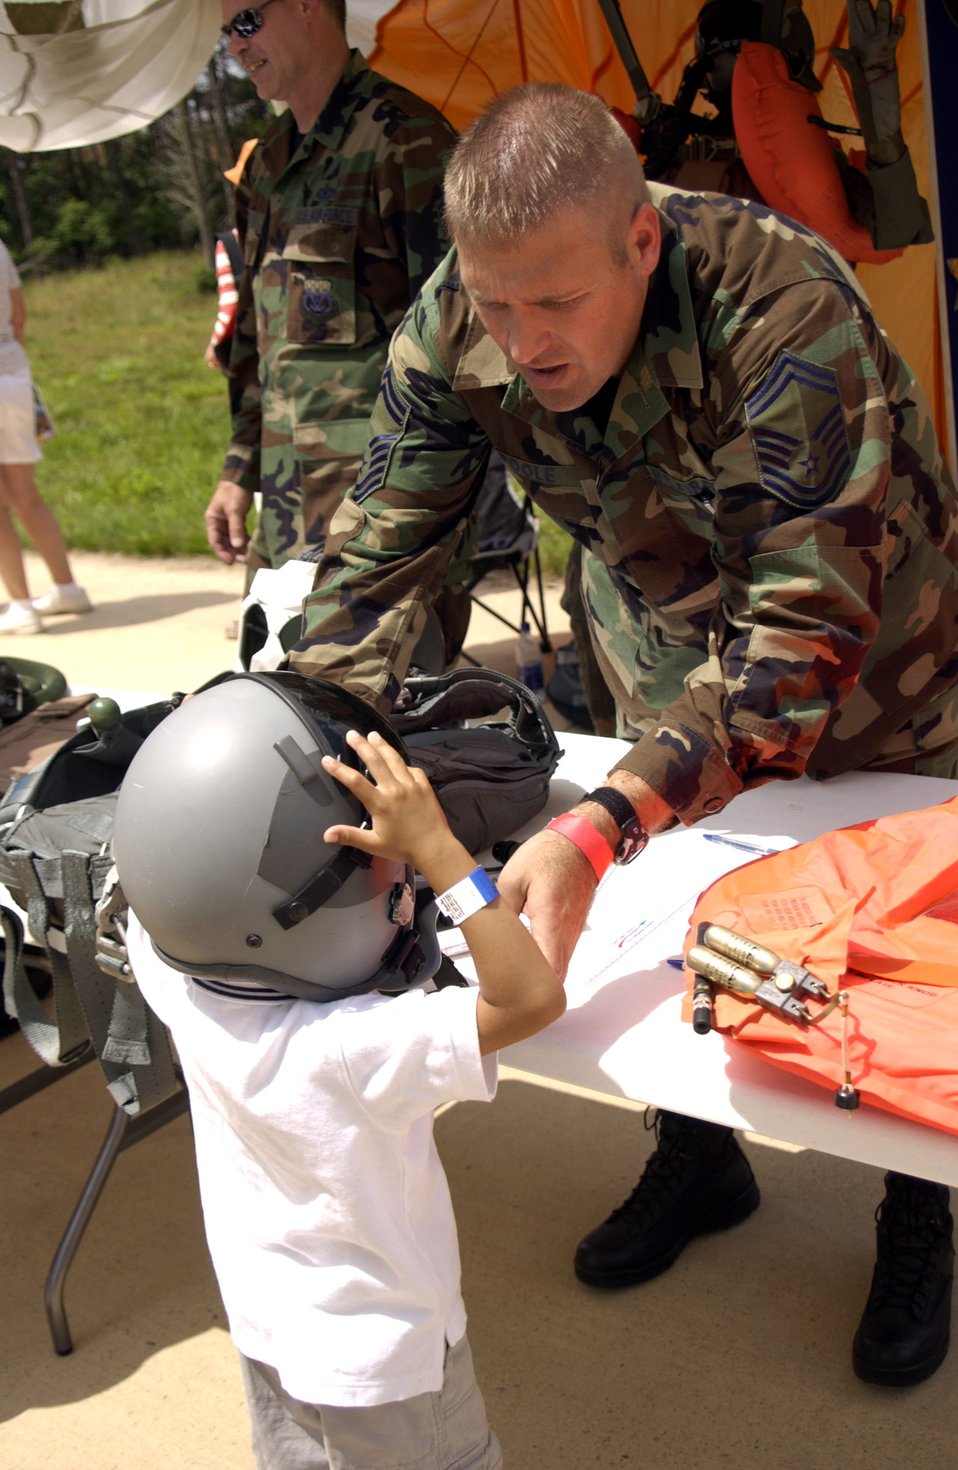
National Air and Space Museum family day wows visitors

Senior Master Sgt. Ray Poole helps 4-year-old Rohan Kettish try on a pilot's helmet during the